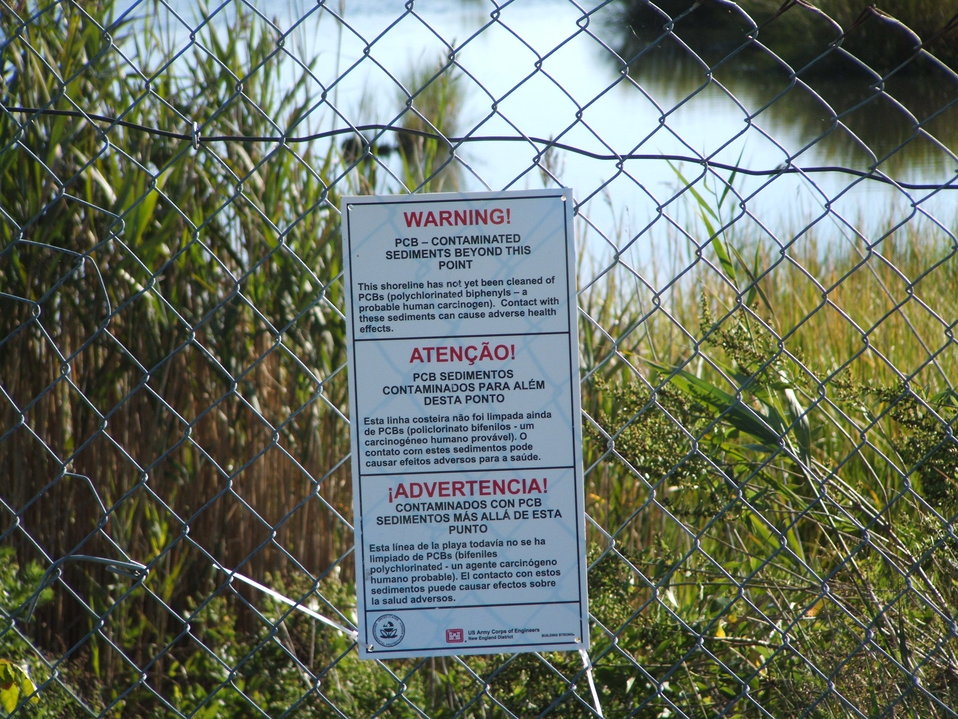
September 2012, Progress is visible past the fence, but much work remains in and around New Bedford Harbor

Fishing restrictions are still in place and in certain areas consumption advisories have been extended beyond the original bans of 1979. Signs along the harbor are periodically inspected and repaired as needed. If you see a sign that is in need of replacement or repair, please let us know at www.epa.gov/nbh

The local seafood consumption advisories can be seen at: www.epa.gov/nbh/seafood.html